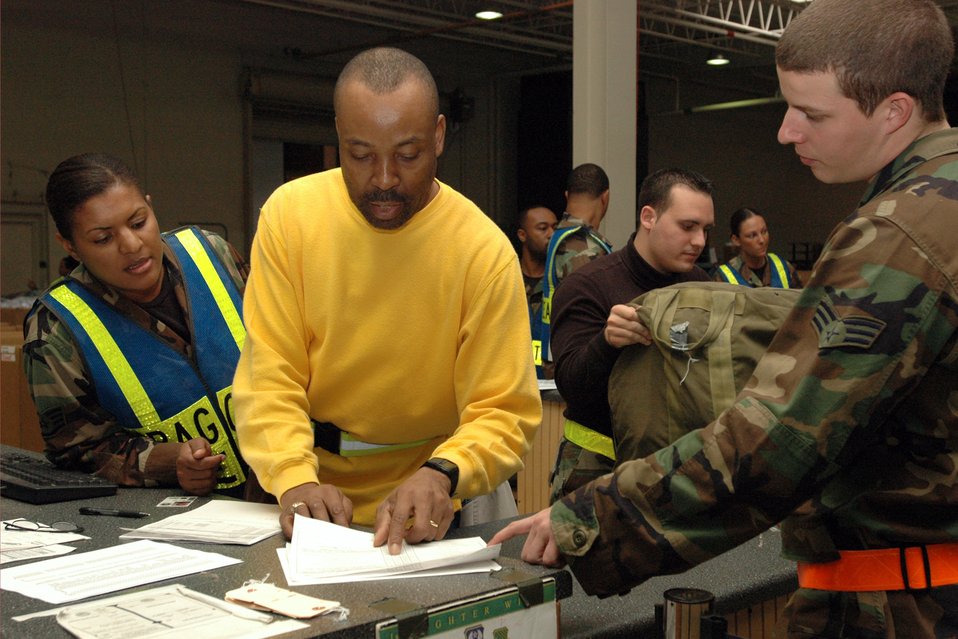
Predeployment briefings

LANGLEY AIR FORCE BASE, Va. (AFPN) -- Civilian employee Marvin Williams (center) briefs an Airman on his upcoming deployment and the gear that he will receive.